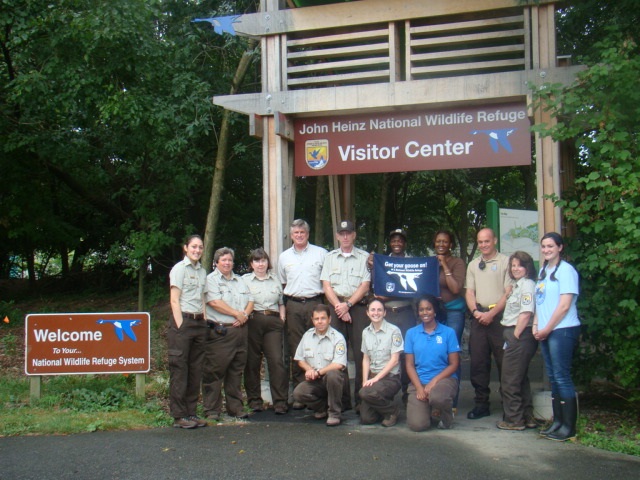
Get Your Goose On!

USFWS Heinz Staff... Get Your Goose On!